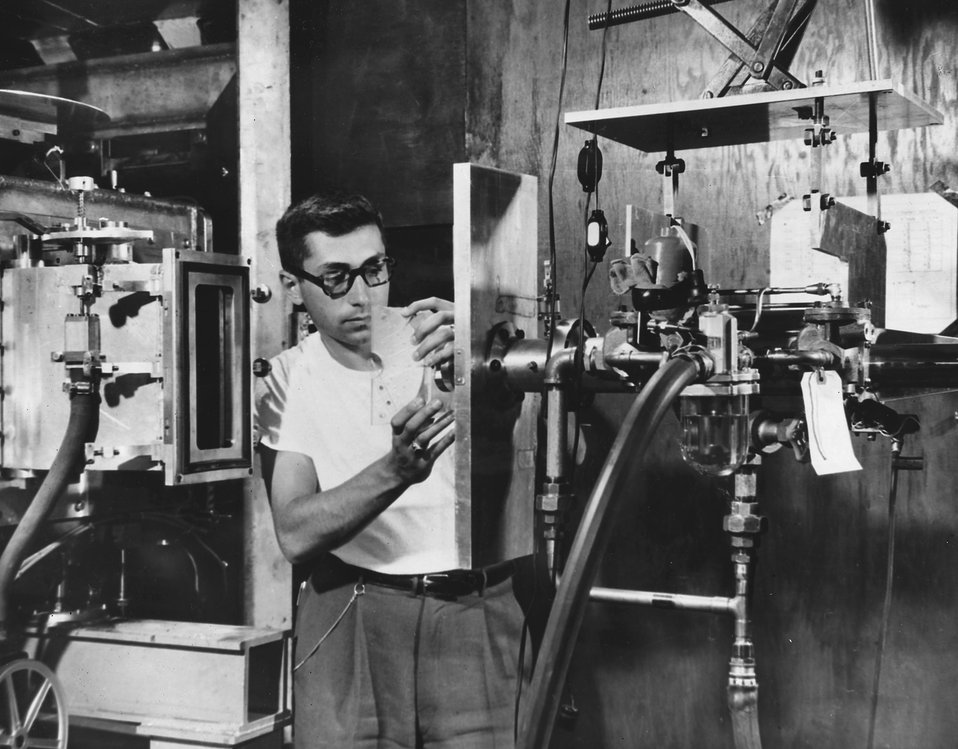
Physicist readies a piece if plastic which will be bombarded by billion volt protons in the Cosmotron at Brookhaven National Laboratory, Upton, New York. c. 1955